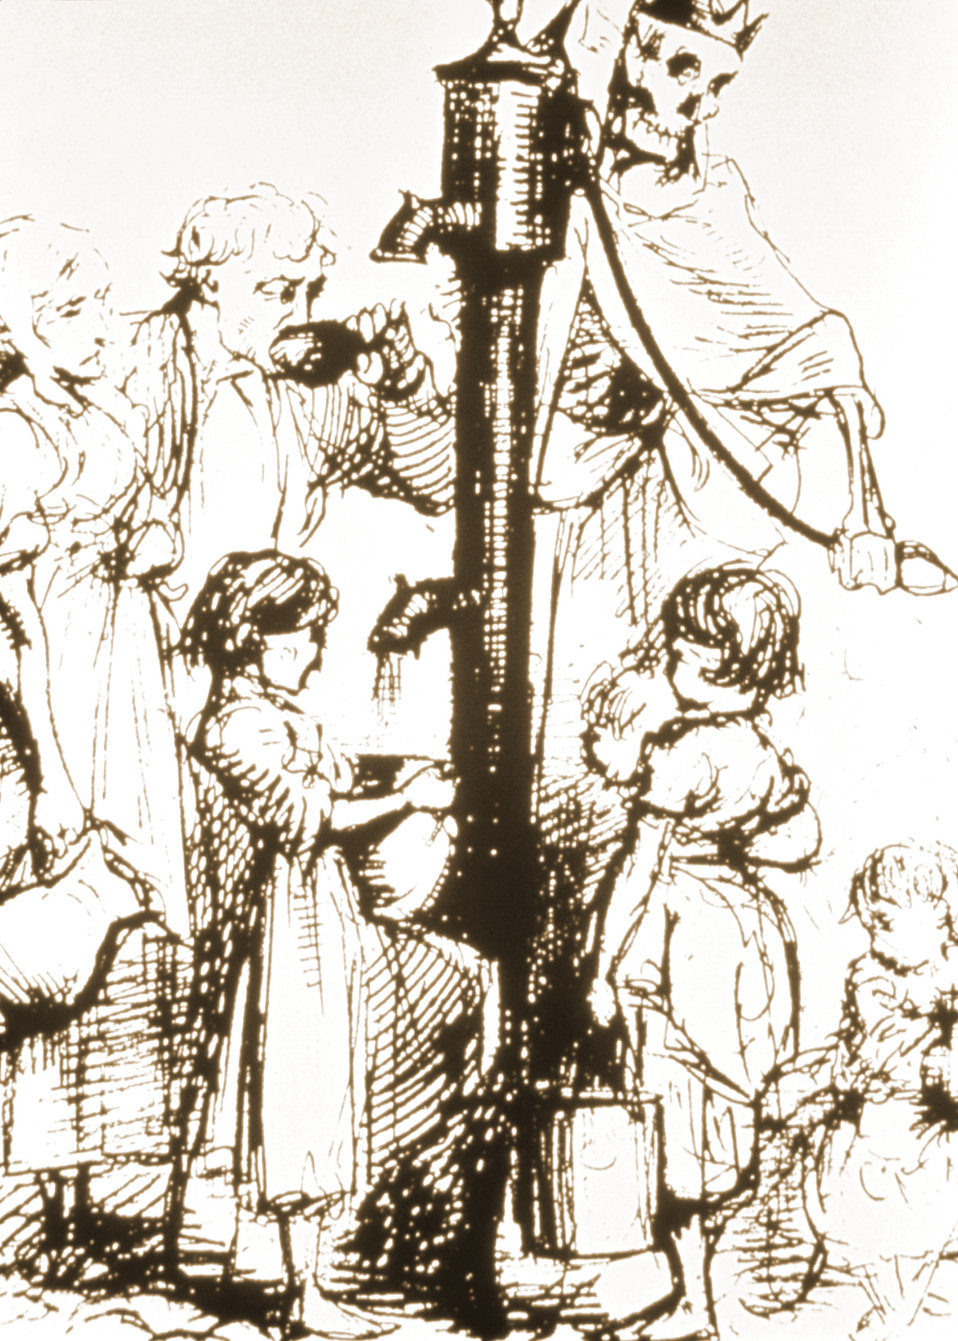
Waterborne transmission of cholera was first recognized in Europe in the mid 19th century by John Snow and others.